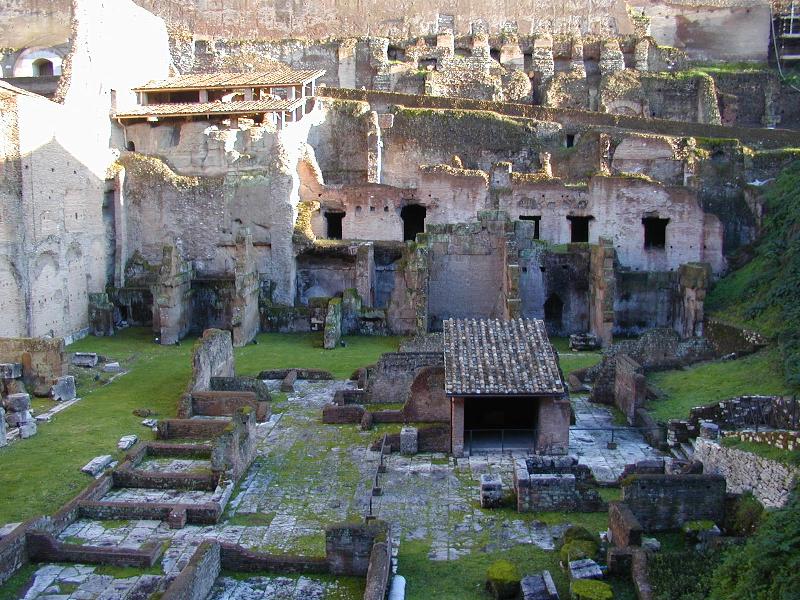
001229 10 palatino horrea 1